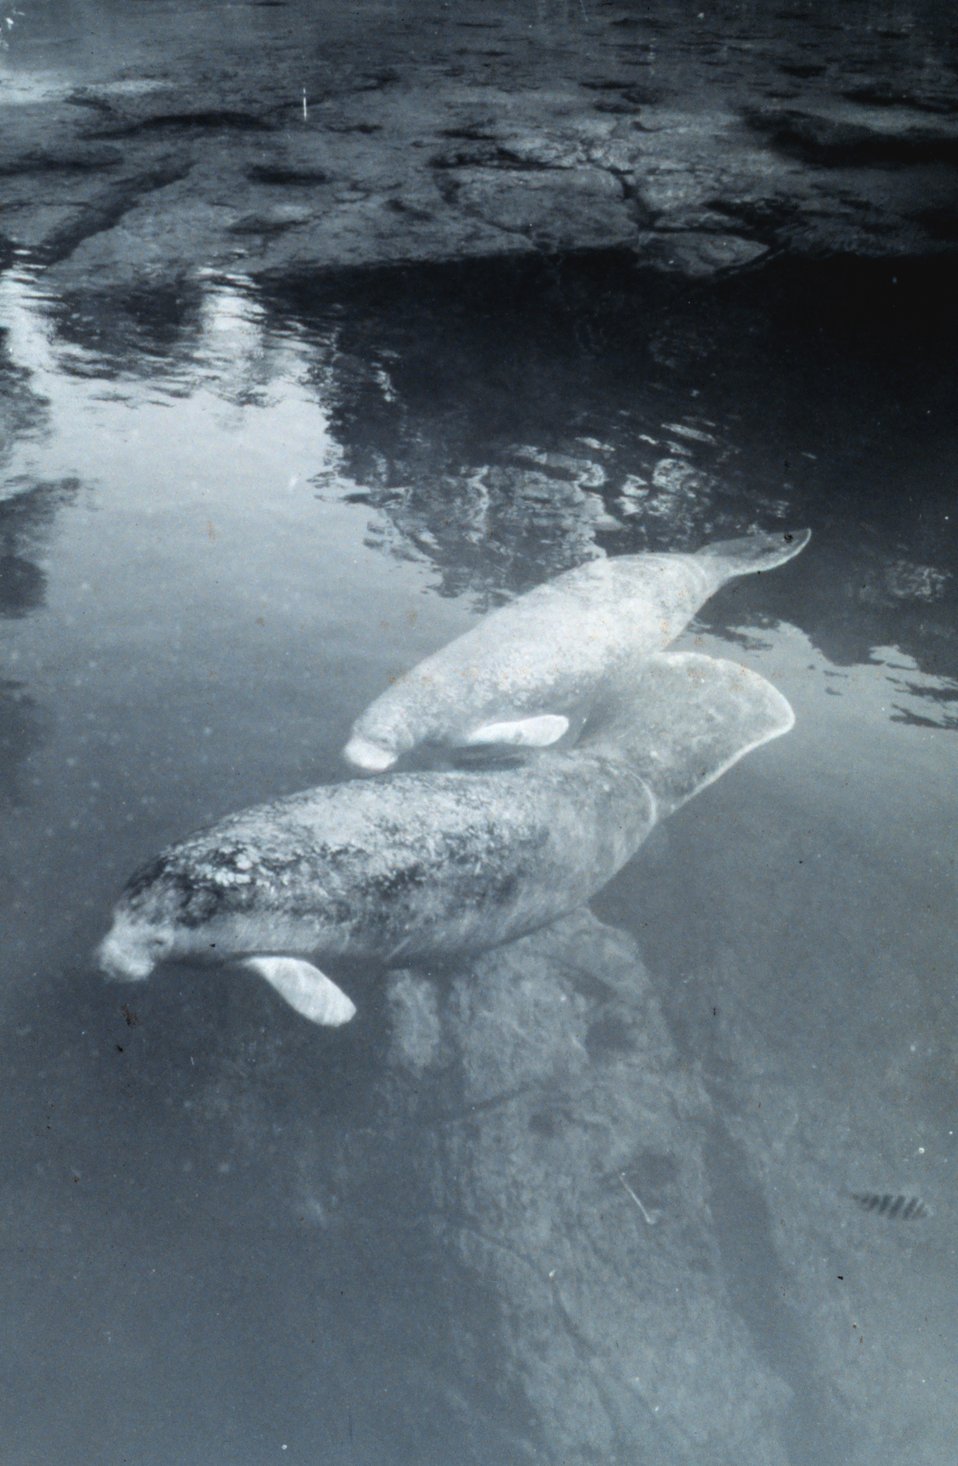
A manatee cow and calf